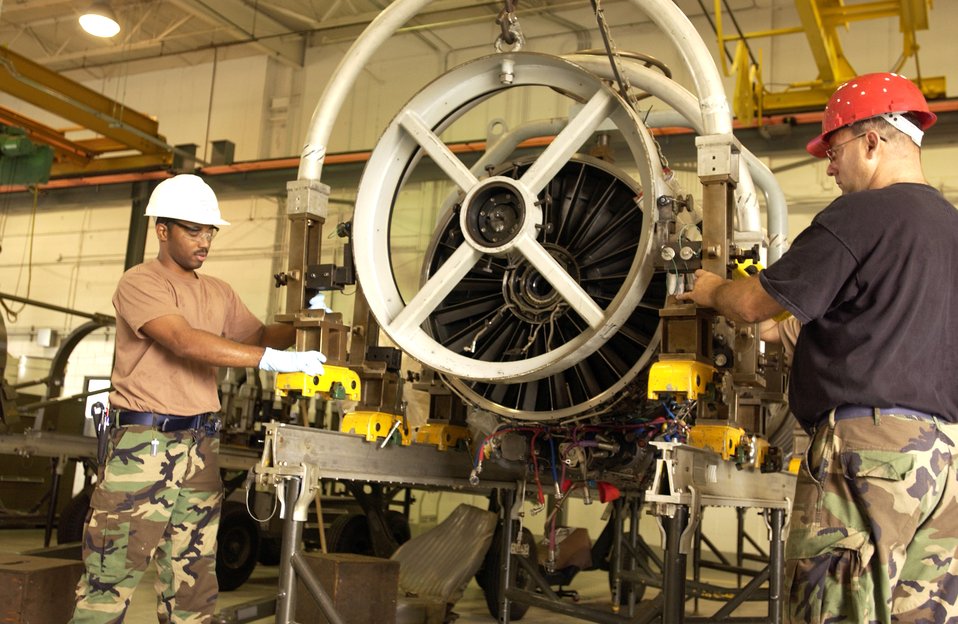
Repairing a FOD-damaged engine

Senior Airman Michael Nathan (left) and Tech. Sgt. Darren Small lower a maintenance adapter into place to support the fan module of an F-15 Eagle engine on May 10, 2006. The engine was undergoing repair for damage caused by foreign object debris, known as FOD. Airman Nathan and Sergeant Small are aerospace propulsion technicians at the Florida Air National Guard's 125th Fighter Wing in Jacksonville.